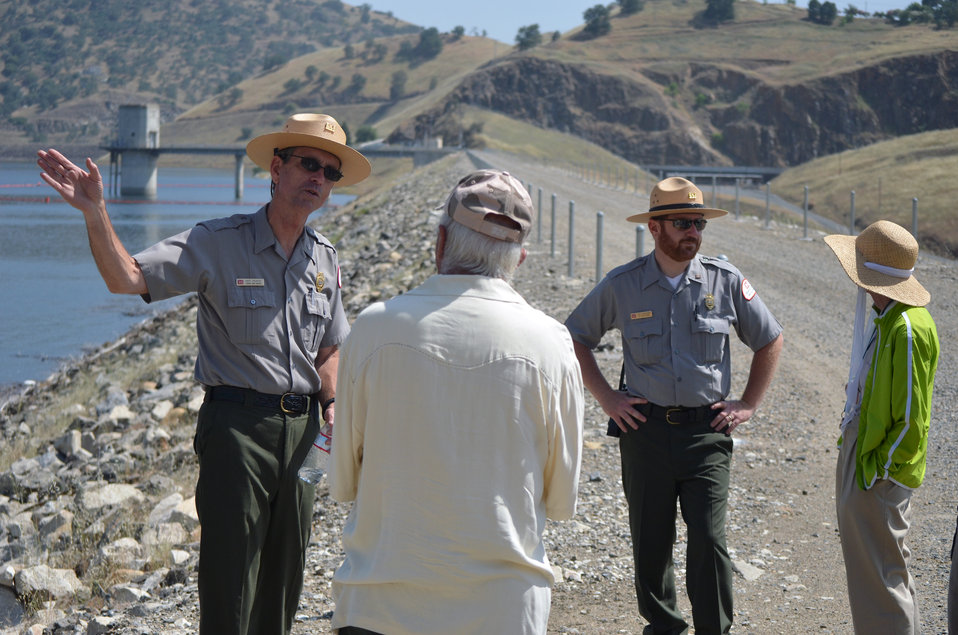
Lake Kaweah celebrates 50 years!

Senior park ranger Matt Murphy (left) and senior district park ranger Jonathan Friedman talk with visitors during a park tour, part of the U.S. Army Corps of Engineers Sacramento District’s 50th anniversary celebration of Lake Kaweah and Terminus Dam near Visalia, Calif., May 18, 2012. Since 1962, the dam has provided reduced risk of flooding and millions of dollars in agricultural, recreation and natural resources benefits.